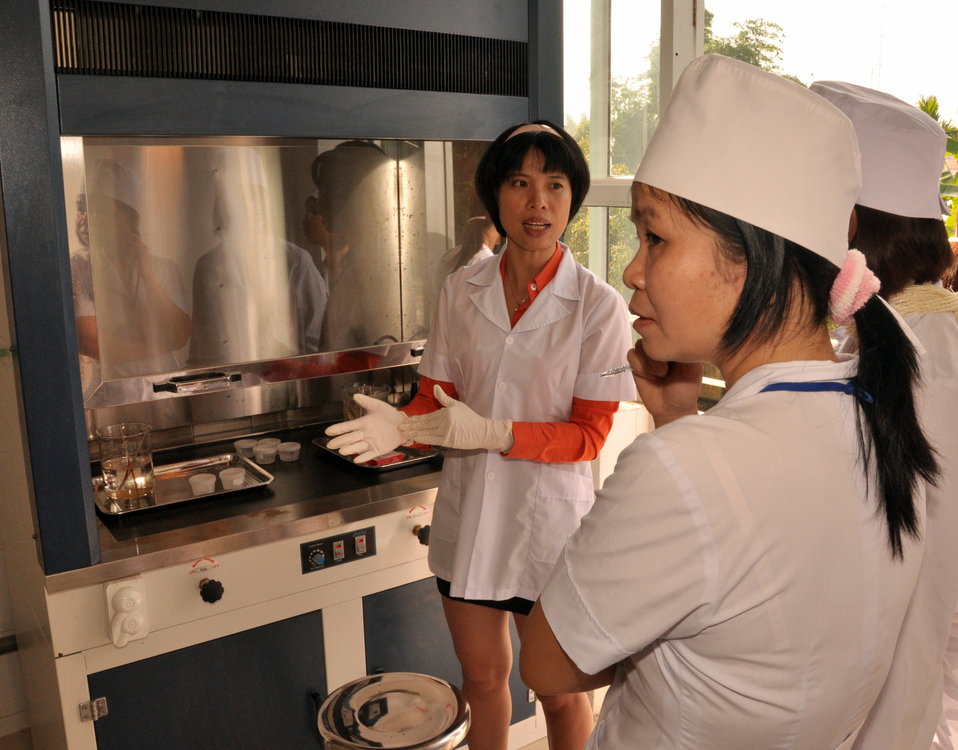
USAID supports new rapid detection TB equipment